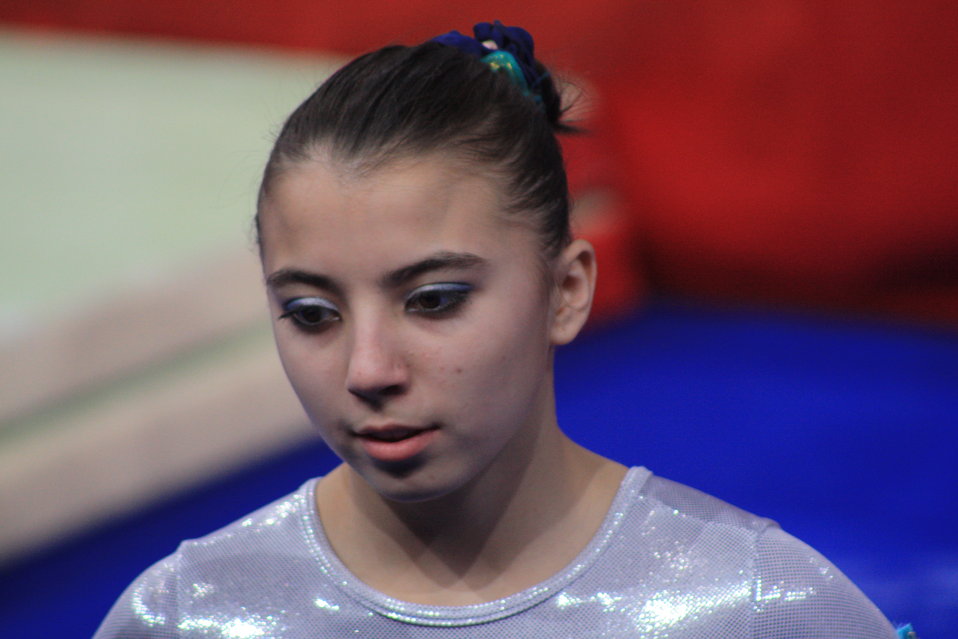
Fran√ßais†: Irina Volodchenko apr√®s son passage en qualifications de la poutre aux 17e Internationaux de France en 2010.